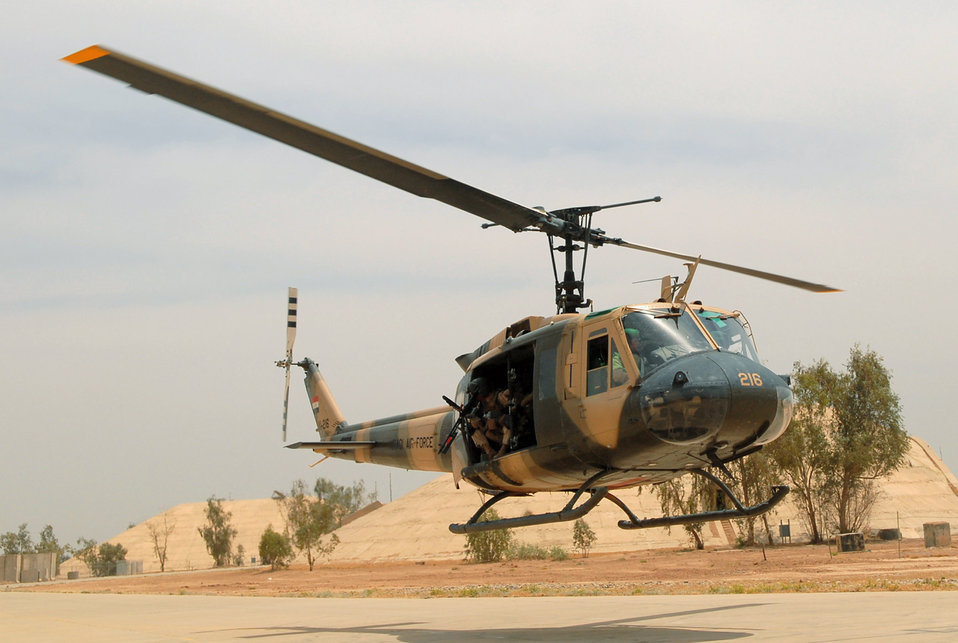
Iraqi air force performs medical evacuation

An Iraqi air force medical evacuation mission was flown in an Iraqi air force Huey II helicopter May 14 from the Air Force Theater Hospital at Balad Air Base, Iraq, to the U.S. Army's 86th Combat Support Hospital in Baghdad.